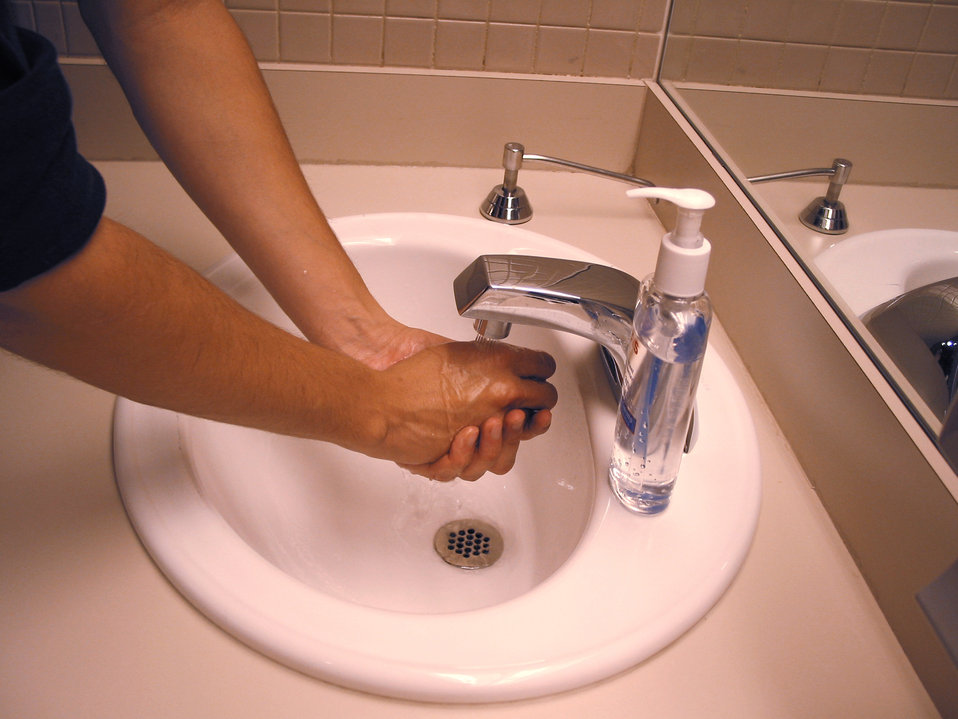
This image demonstrates how a smallpox vaccinee washes his hands after handling his vaccination site bandage.